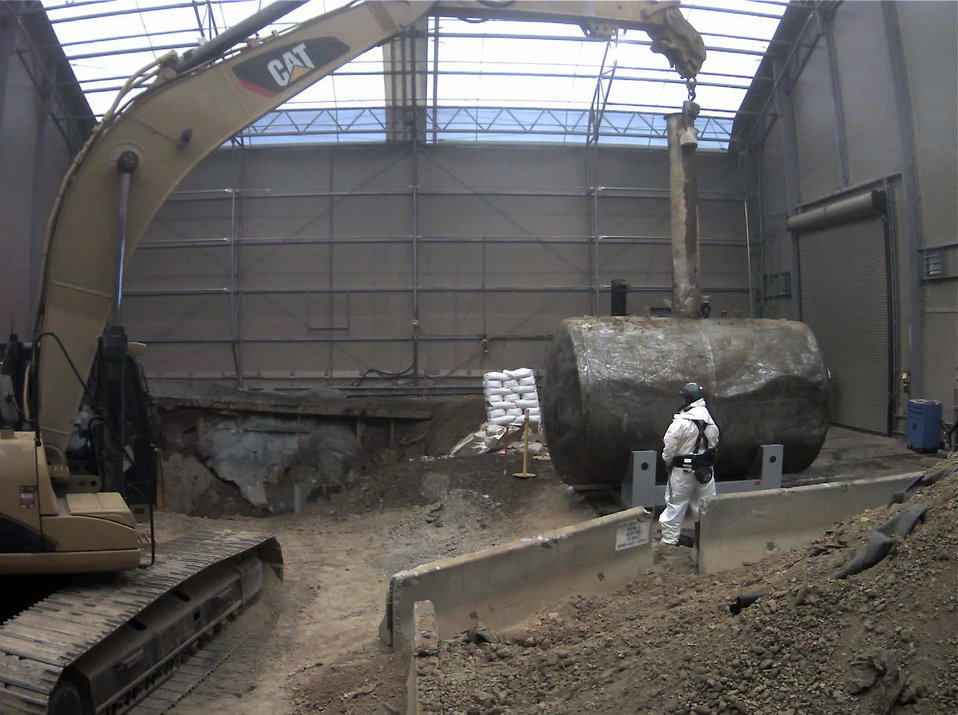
Oak Ridge Removes Lab’s Greatest Source of Groundwater Contamination

Workers remove the 4,000-gallon Tank W-1A, which was ORNL’s greatest source of groundwater contamination.

The high-priority EM cleanup project involved extensive characterization, removal of contaminated soil and excavation of the 4,000-gallon stainless steel tank.